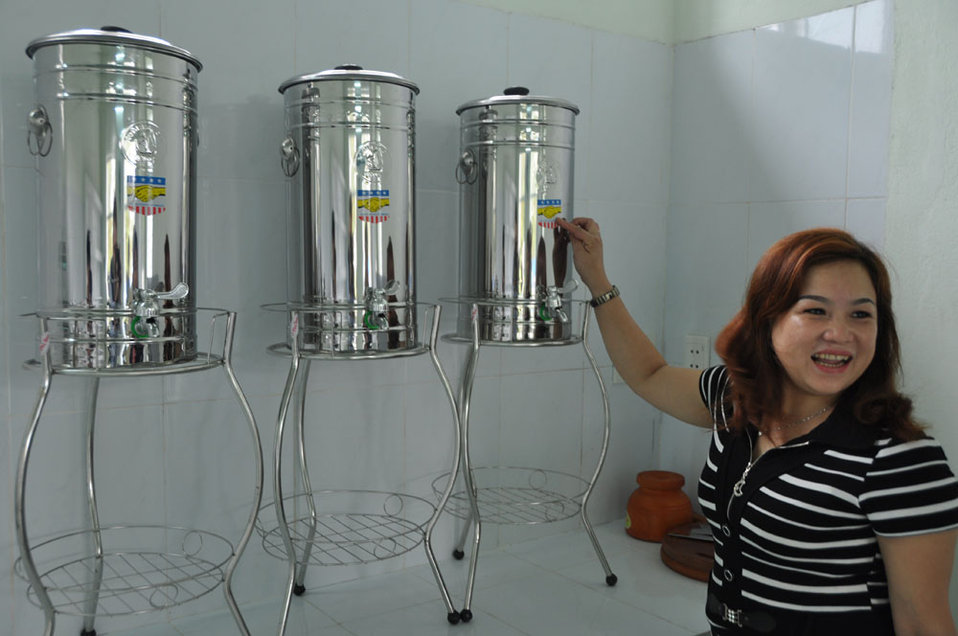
A kindergarten receives a new kitchen, funded by USAID.